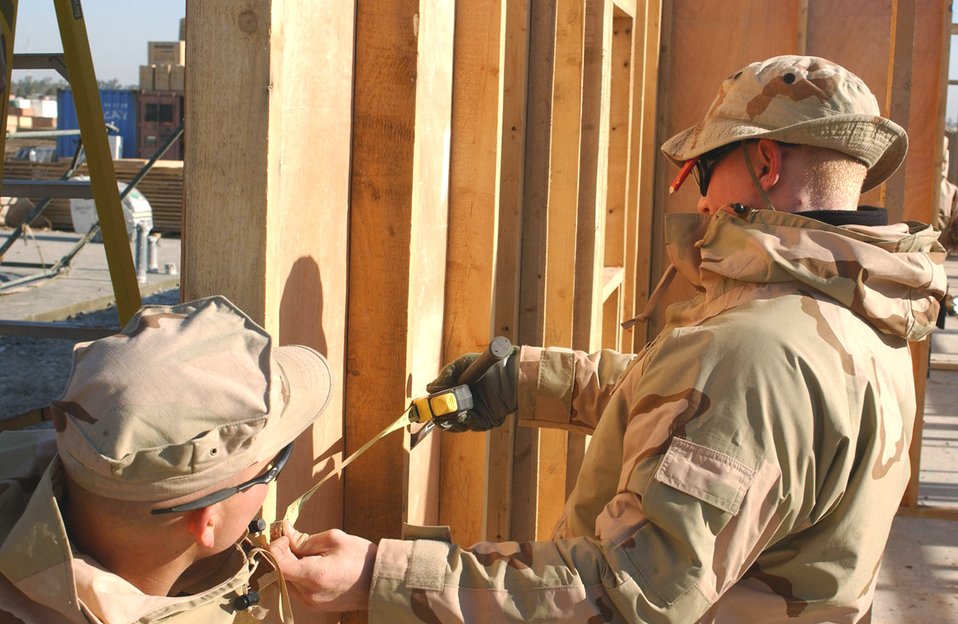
Airmen build future with present mission

Airmen Benjamin Rasine and Nick Soracco measure out lengths for an office building being built at Camp Liberty in Iraq Dec. 28. The Airmen are civil engineers with the 1st Special Operations Civil Engineer Squadron at Hurlburt Field, Fla.